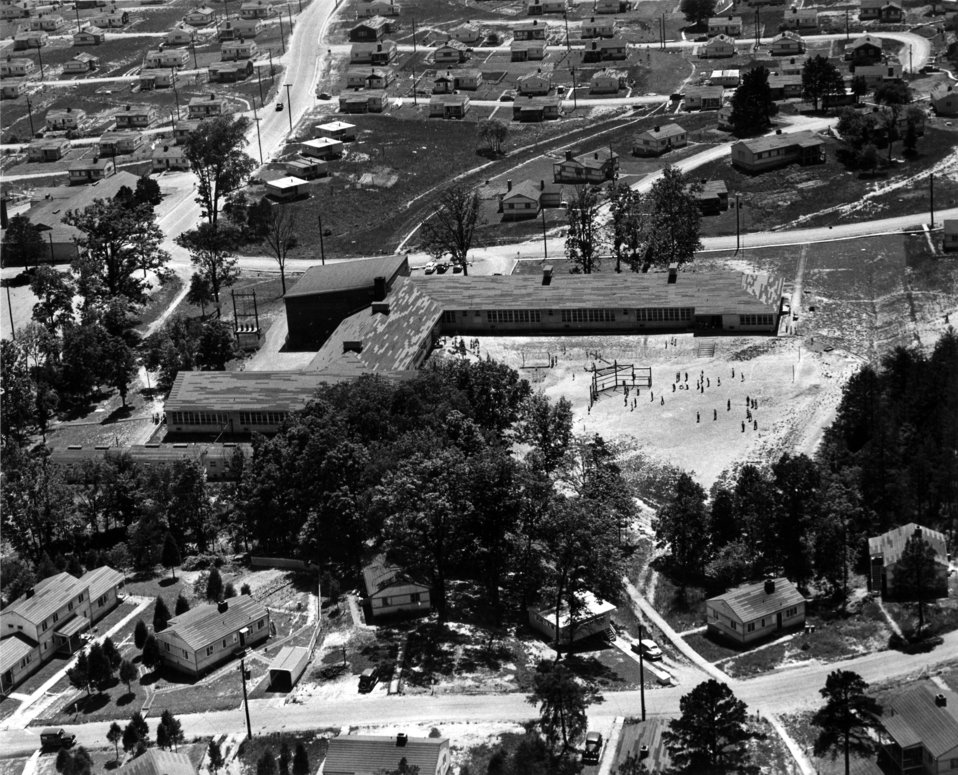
Elm Grove School 1940s Oak Ridge

3506 DOE photo Ed Westcott 1940s Oak Ridge Tennessee